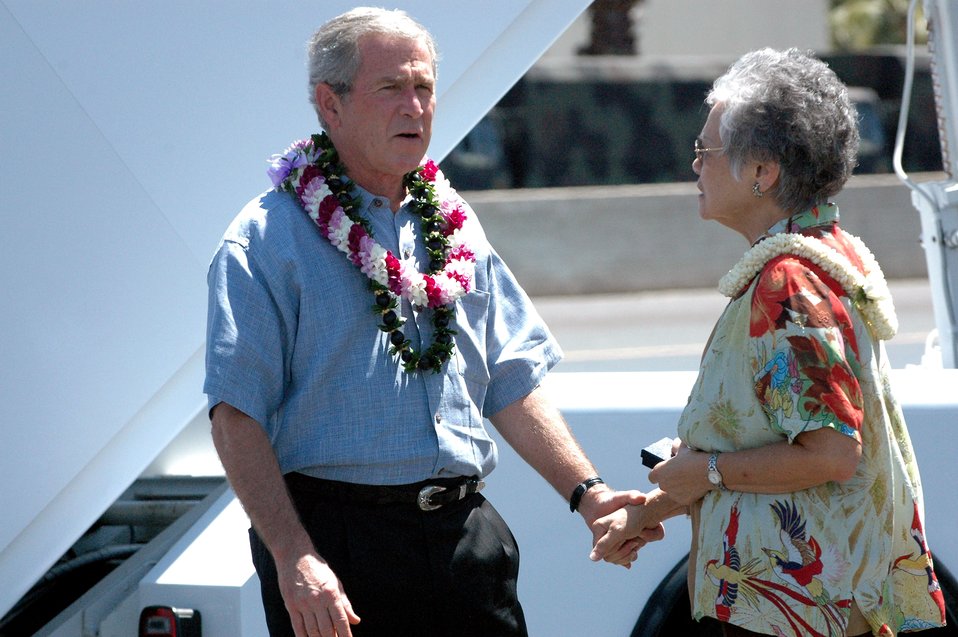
President visits Hickam

President George W. Bush meets with Caroline Tom to present her a volunteer service pin, recognizing her for 15 years of volunteering her time, Sept. 8 at Hickam Air Force Base, Hawaii. The president also met with 33 wounded servicemembers and their families.